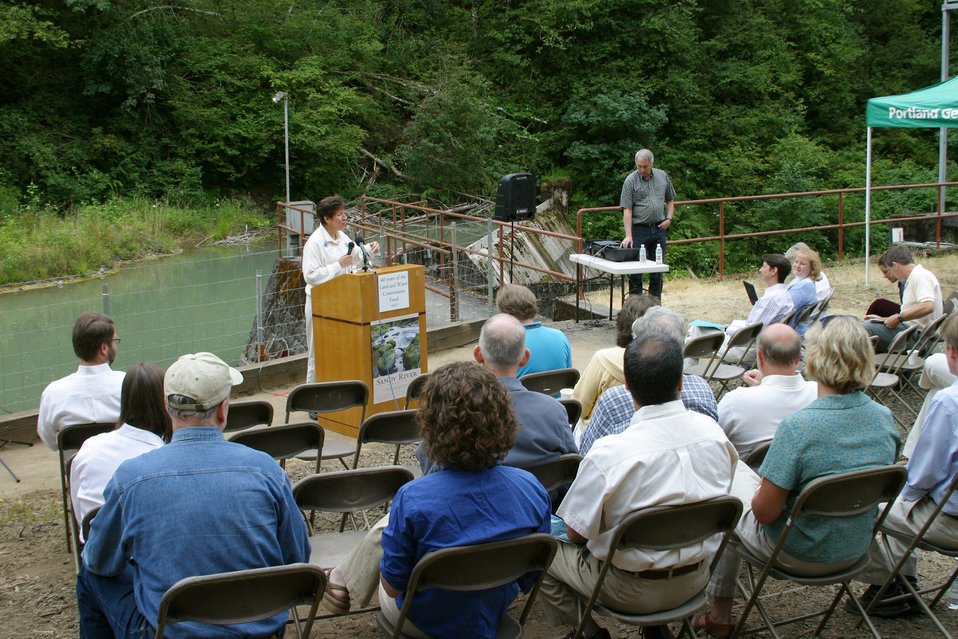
Elaine Brong, BLM State Director for Oregon, speaks during the Four C's Award ceremony at the Little Sandy Dam. The award was presented by Kathleen Clarke, BLM Direcgor, to PGE and the Western River Conservancy.